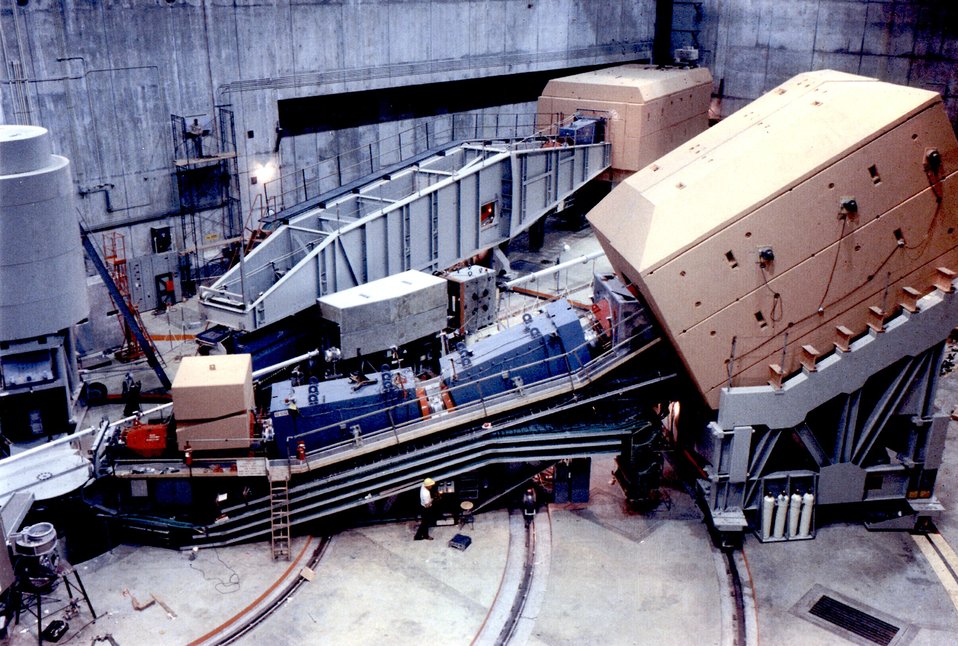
SPECTROMETER IN END STATION AT THE STANFORD LINEAR ACCELERATOR.

DOE'S STANFORD LINEAR ACCELERATOR SCIENTISTS CONDUCT EXPERIMENTAL AND THEORETICAL RESEARCH IN HIGH ENERGY PHYSICS AND DEVELOPMENTAL STUDIES IN NEW TECHNIQUES FOR PARTICLE ACCELERATION. SLAC IS A NATIONAL BASIC RESEARCH LABORATORY, PROBING THE STRUCTURE OF MATTER AT THE ATOMIC SCALE WITH X-RAYS AND AT MUCH SMALLER SCALES WITH ELECTRON POSITRON BEAMS.